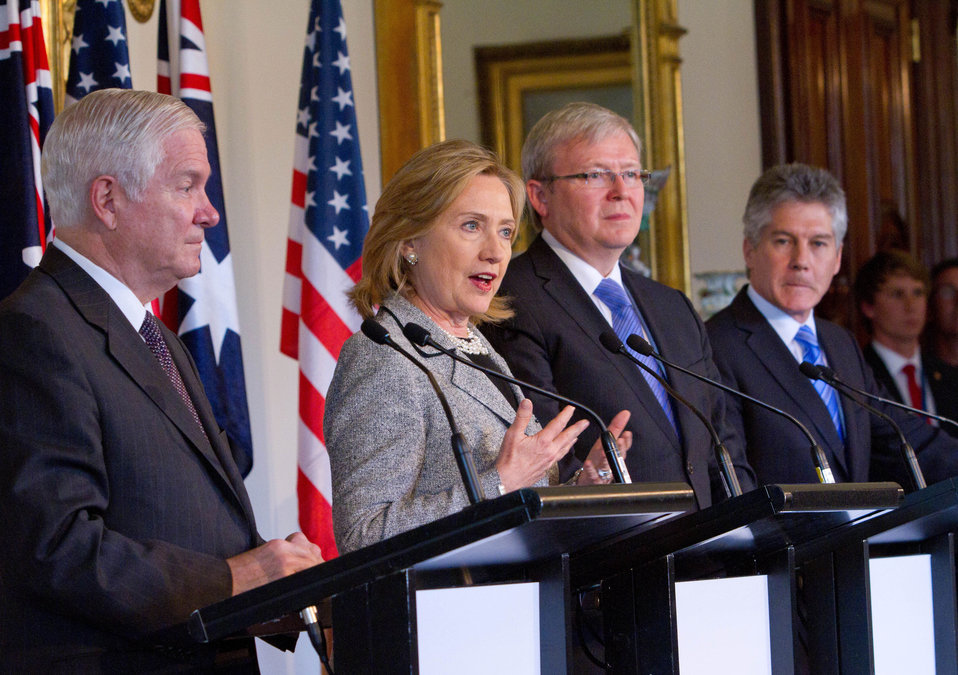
Secretary Clinton Speaks at the AUSMIN Press Conference

U.S. Secretary of State Hillary Rodham Clinton, second from left, speaks as U.S. Secretary of Defense Robert Gates, left, Australian Foreign Affairs Minister Kevin Rudd, second from right, and Australian Defense Minister Stephen Smith look on during a press conference after the annual Australia-U.S. Ministerial Consultations (AUSMIN) at the Government House in Melbourne, Australia, on November 8, 2010.